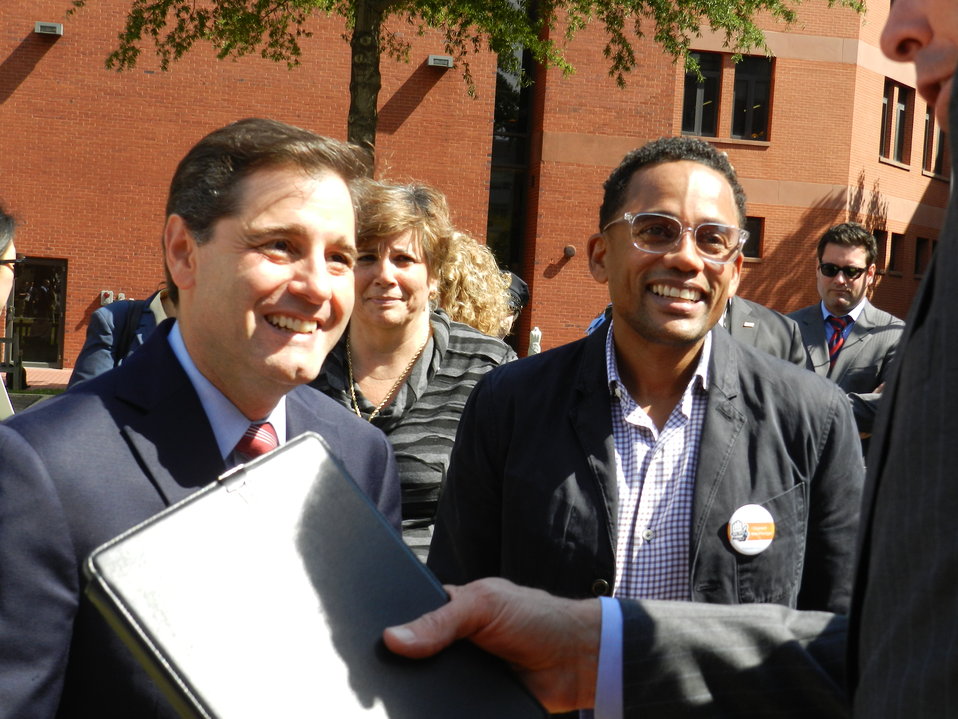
It Can Wait Pledge Day 9.19.12

Chairman Genachowski & Hill Harper the at the ‘No Text On Board’ Pledge Day Event, The George Washington University, Washington, D.C. September 19, 2012